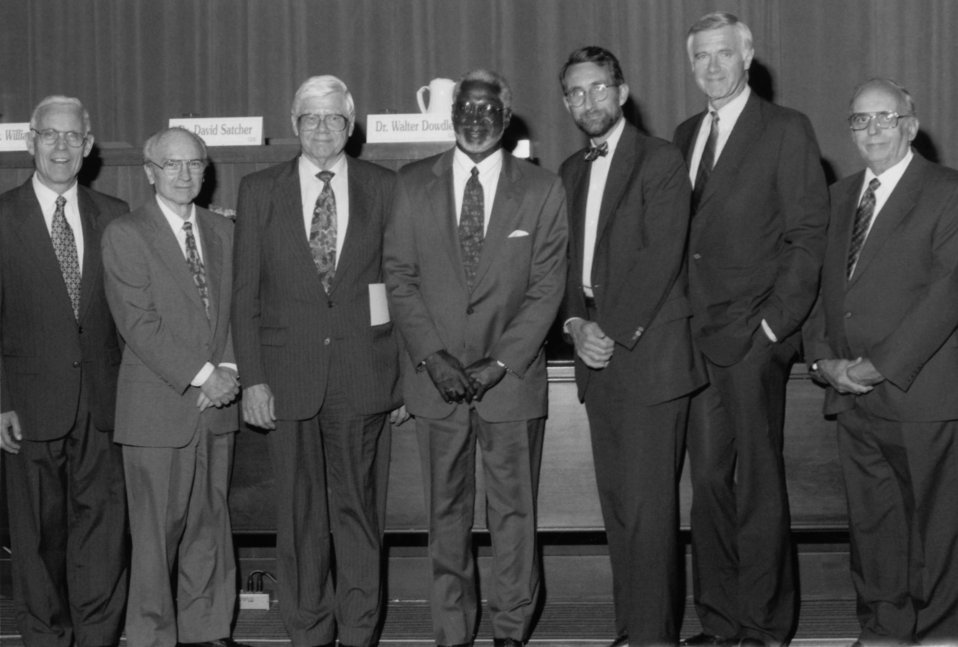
This 1996 ceremony was in honor of former Centers for Disease Control Directors, and took place at the CDC's 50th anniversary, July 1, 1996.